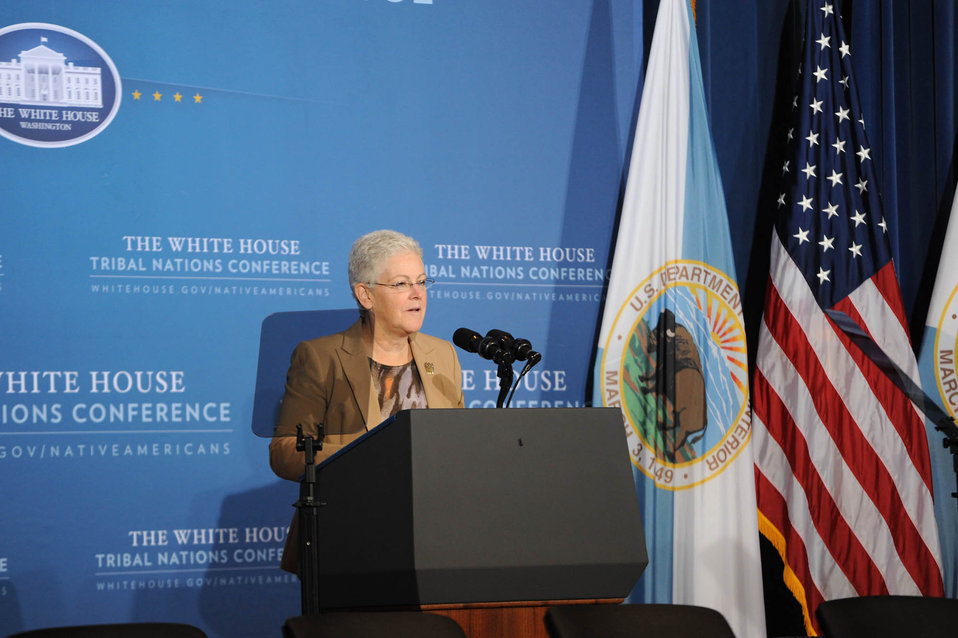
November 13, 2013 - Administrator McCarthy attends White House Tribal Conference

Administrator McCarthy joined President Obama and other administration officials at the White House Tribal Conference on November 13, 2013. The Conference was attended by leaders of 566 federally recognized tribes and members of the White House Council on Native American Affairs.